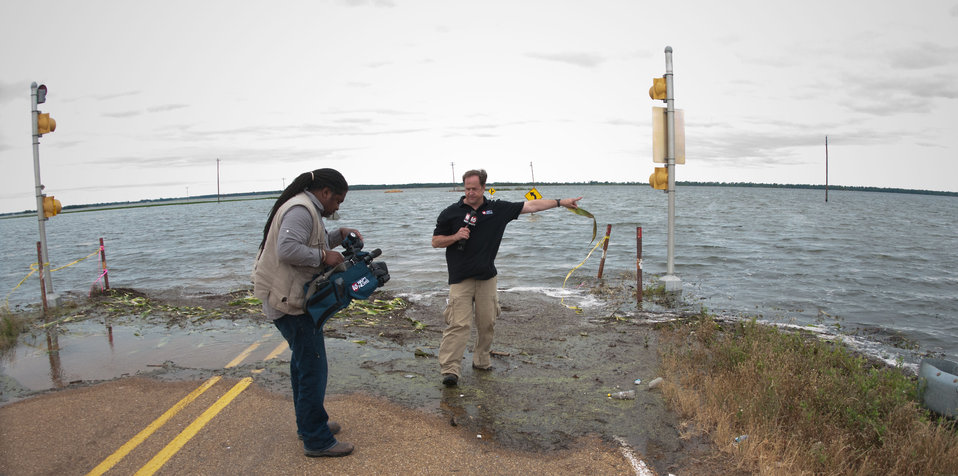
WAPT 16 News Anchor Scott Simmons reports from the roadway shoreline in Satartia, MS, on Monday, May 16. 2011. Mississippi River floodwaters have pushed into Yazoo River and into this corn (left) and wheat (right) fields.The community of 96 was evacuated and this clearing of approximately 4,000 acres was completely flooded. Wave action and decay has freed parts of corn stalks collecting along the new shoreline. The water saturated soil does not allow enough oxygen to the plant, by the time the water is expected to recede, the stalks will be dead. The wheat was harvested earlier two weeks earlier than scheduled from wet fields and will have to be dried before being used or sold. New media crews come and go throughout the day reporting from this bridge and roadway.